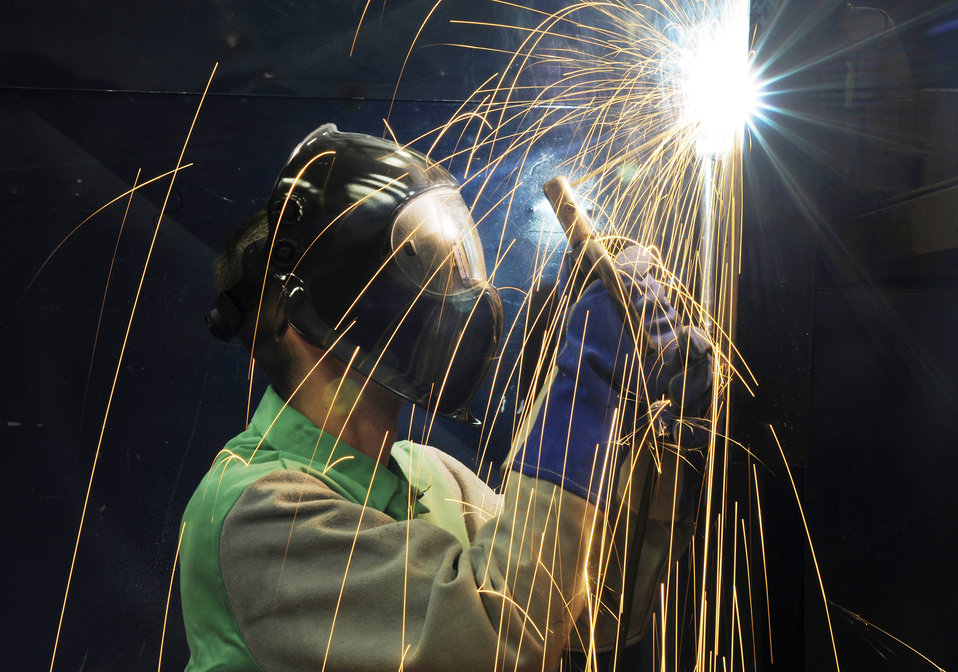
An illuminating arch

Airman 1st Class James Moreland welds a vertical arc at the Aircraft Metals Technology Shop March 30, 2010, on Joint Base Charleston, S.C. Technicians assigned to the shop perform welding on ground support equipment and fabricate parts for the C-17 Globemaster III. Airman Moreland is a metals technology apprentice with the 437th Maintenance Squadron.